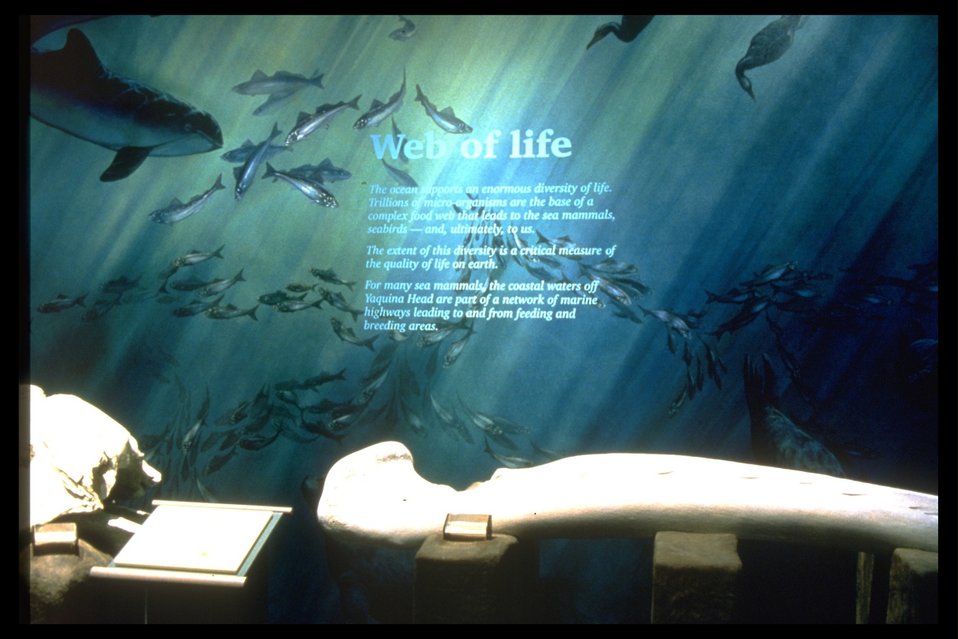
Gray whale bone exhibit.